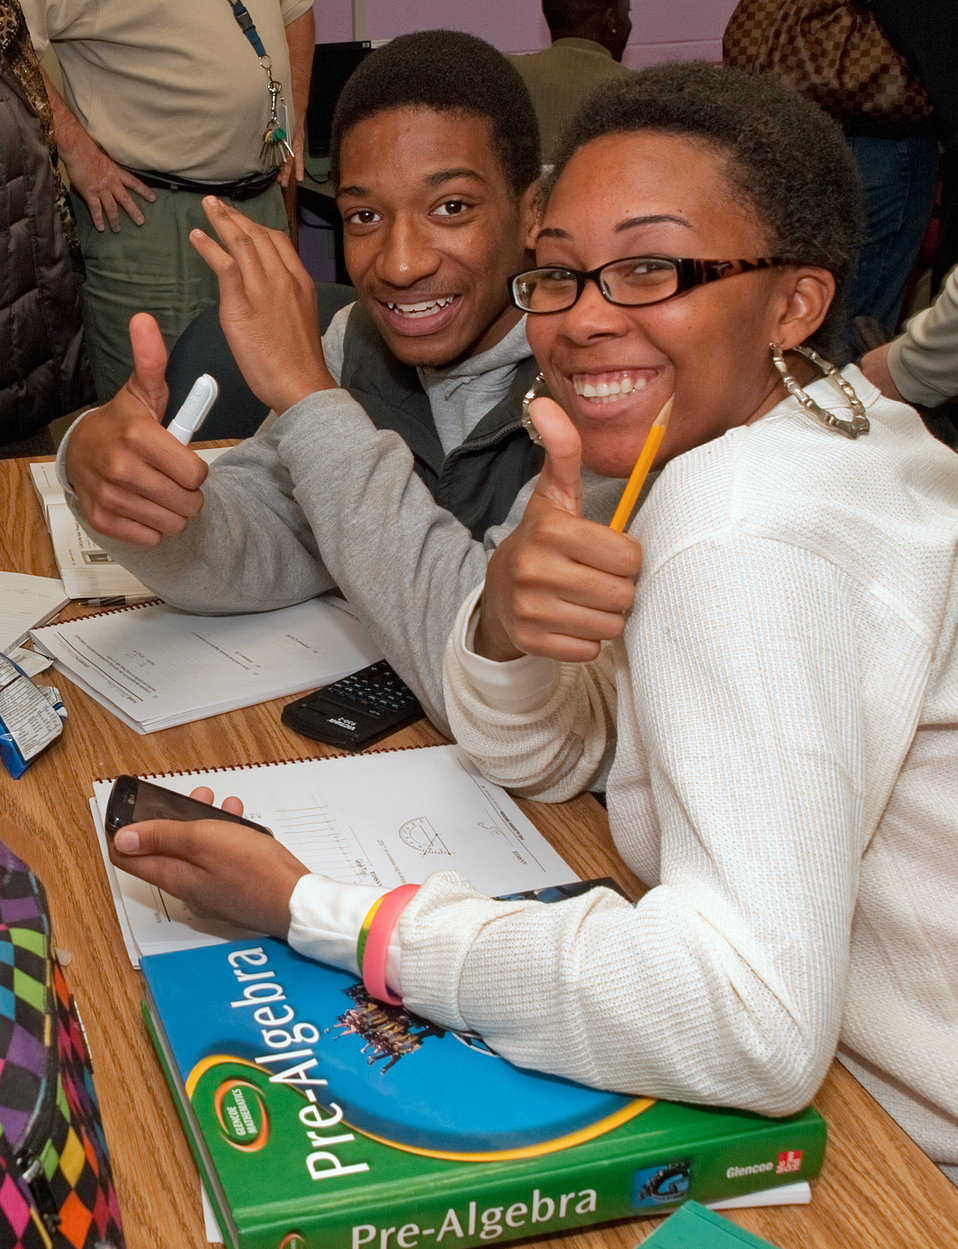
Students Dwayne Hunt and Andre'a Keyes at the Job Civilian Conservation Corp Center (JCCCC) in Harpers Ferry, WV on Nov. 8, 2012. The U.S. Forest Service manages 28 Job Corps Civilian Conservation Centers.